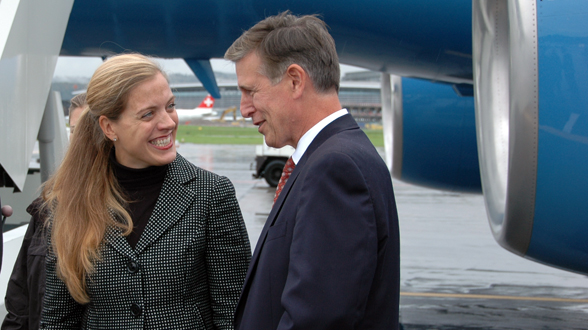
Secretary Clinton Arrives in Zurich

U.S. Secretary of State Hillary Rodham Clinton is greeted by U.S. Ambassador to Switzerland Donald S. Beyer and Ms. Alexandra Baumann (Federal Department of Foreign Affairs) during her arrival in Zurich, Switzerland October 9, 2009.